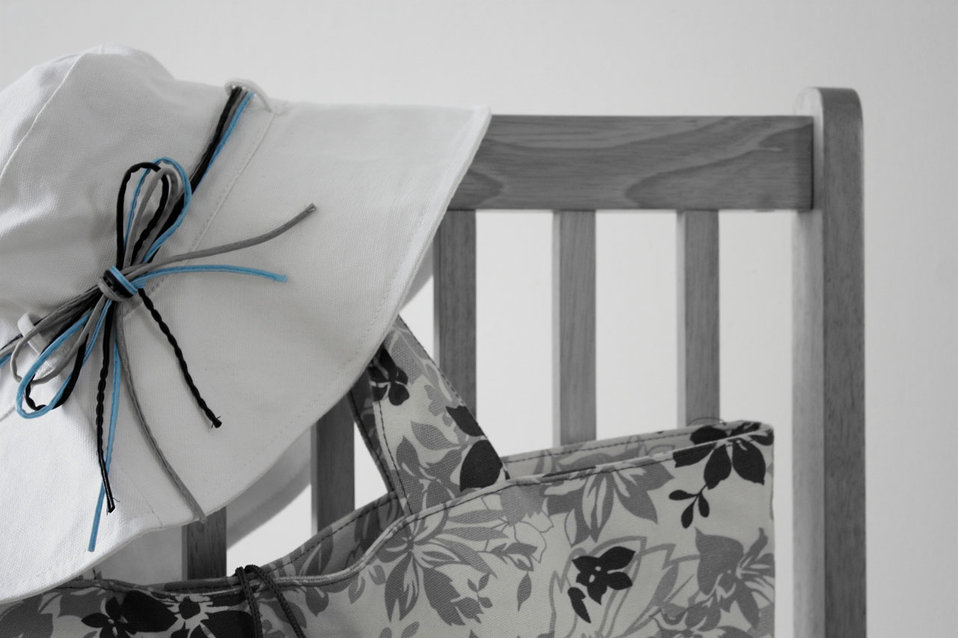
Hat and bag on a chair.